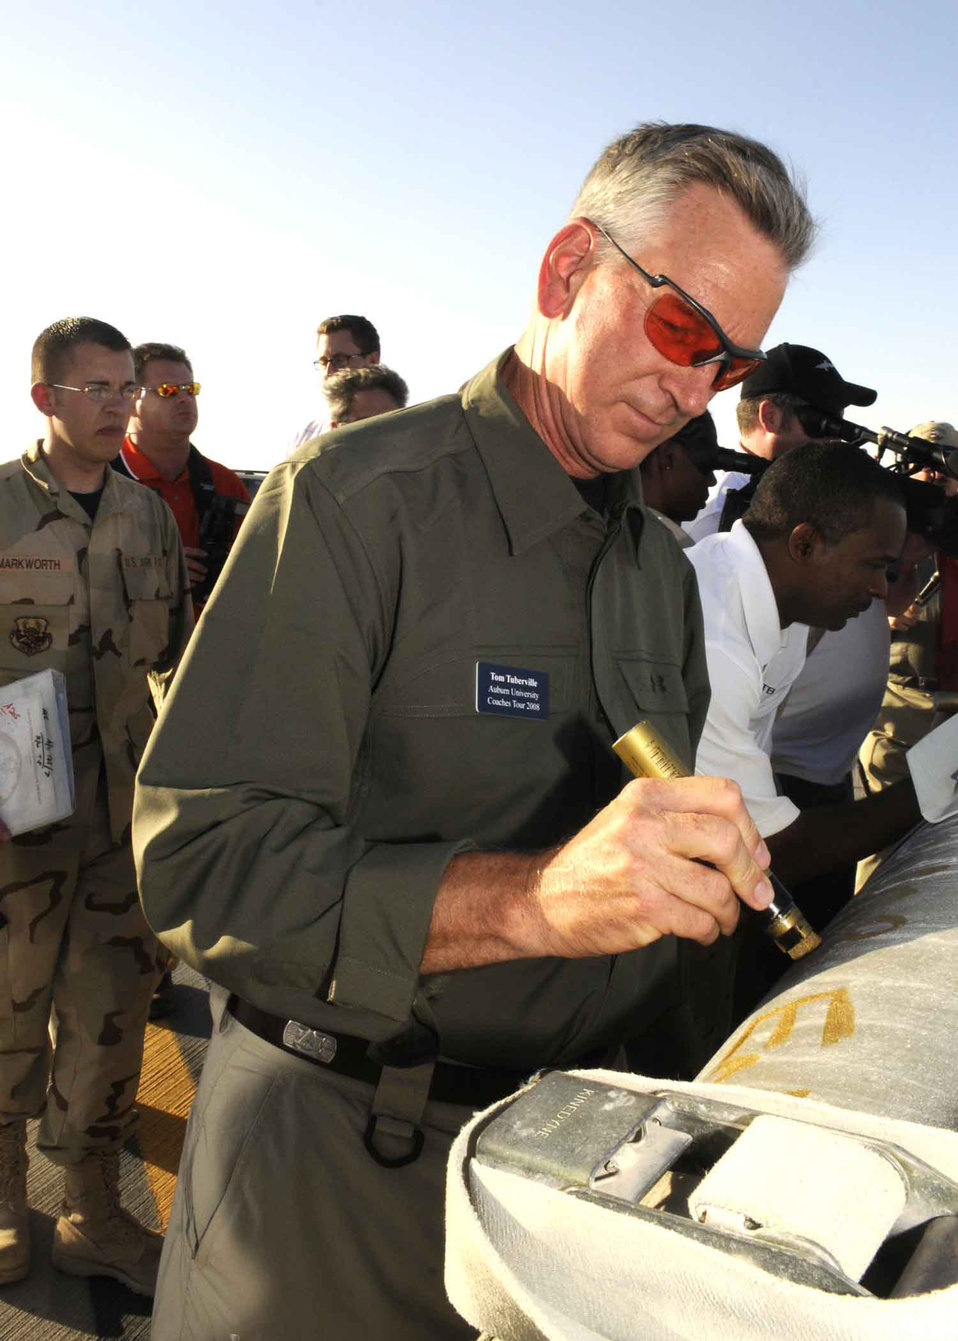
NCAA coaches 'touchdown' in AOR

Auburn University head coach Tommy Tuberville signs a munition on the flightline in Southwest Asia May 22.